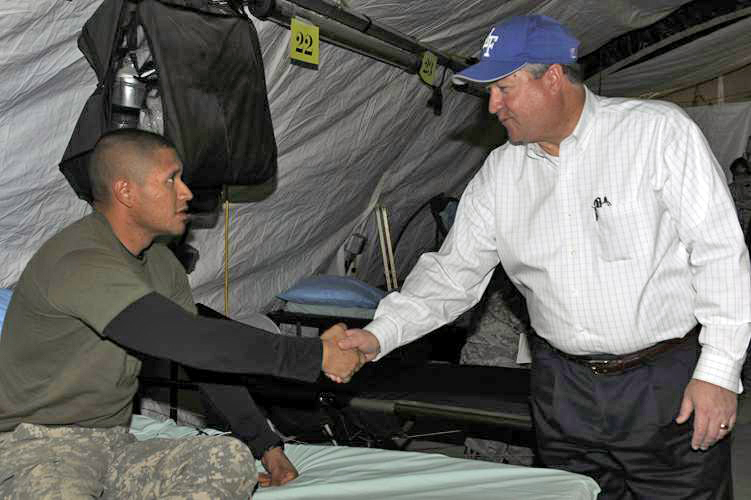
Air Force secretary: Importance of joint mission can't be stressed enough in Afghanistan

Secretary of the Air Force Michael Donley visits with Army Spc. Eric Morales who's a patient at the Craig Joint Theater Hospital Feb. 2, 2010, at Bagram Airfield, Afghanistan. Secretary Donley was in Afghanistan to monitor the training efforts of the Afghanistan National Army Air Corps and to meet with Airmen. Specialist Morales is assigned to the 1st Battalion, 12th Infantry.